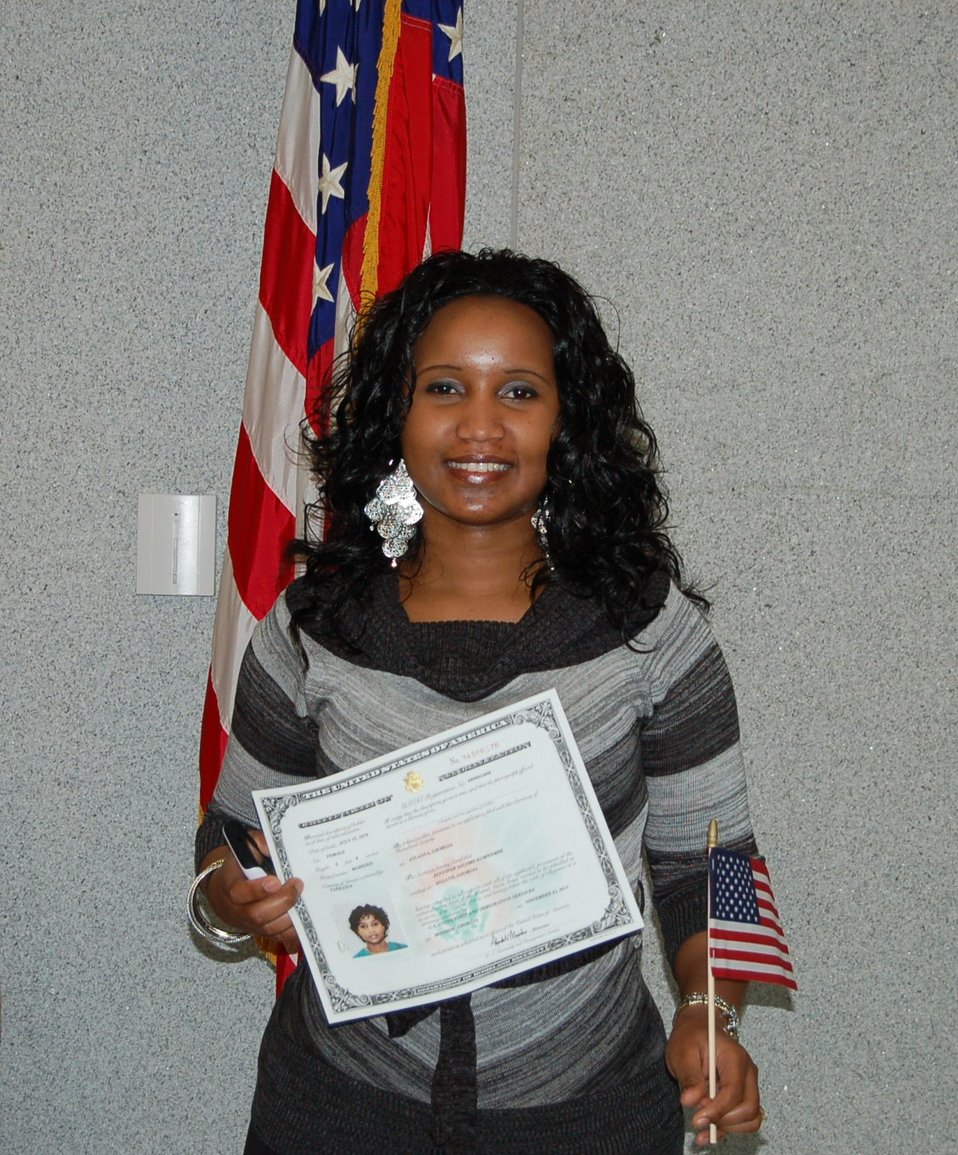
New Citizens